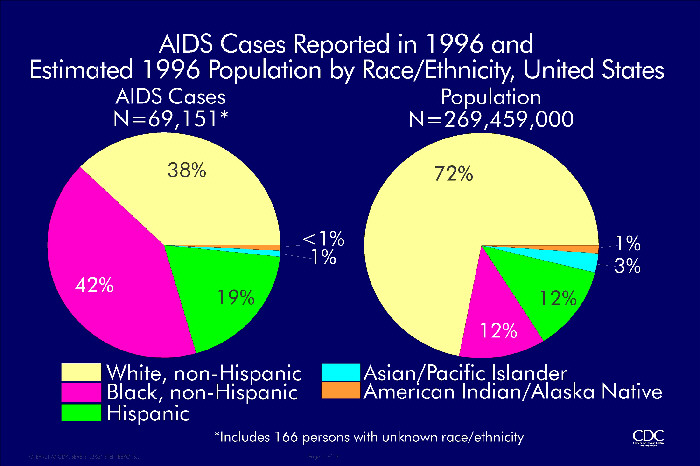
AIDS Cases Reported in 1996 and Estimated 1996 Population by Race/Ethnicity, United States